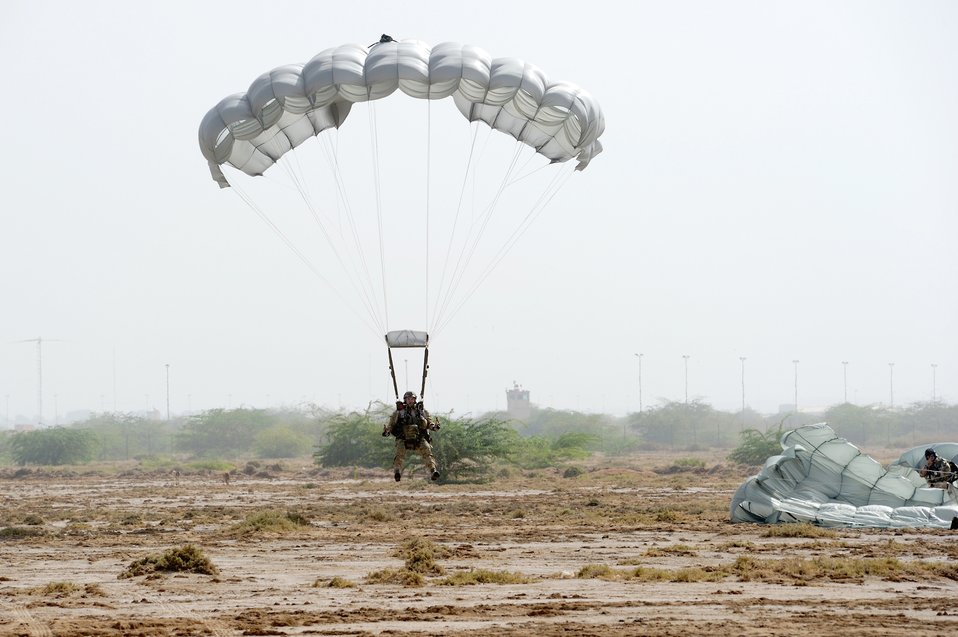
X marks the spot

Air Force pararescuemen drop into the zone during a combat search and rescue extraction exercise at an